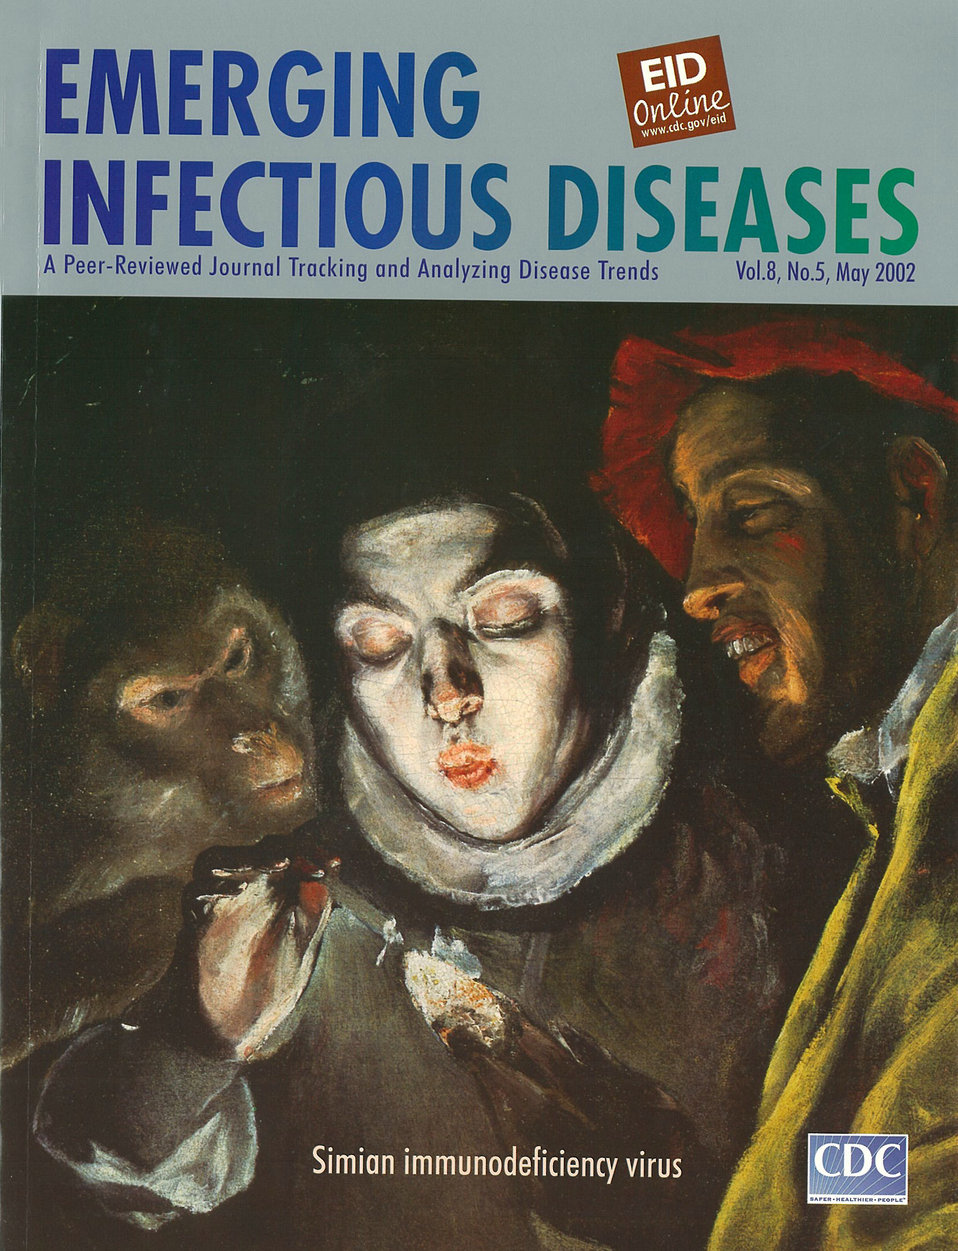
Emerging Infectious Diseases (EID) cover artwork for Volume 8, Number 5, May 2002 issue.